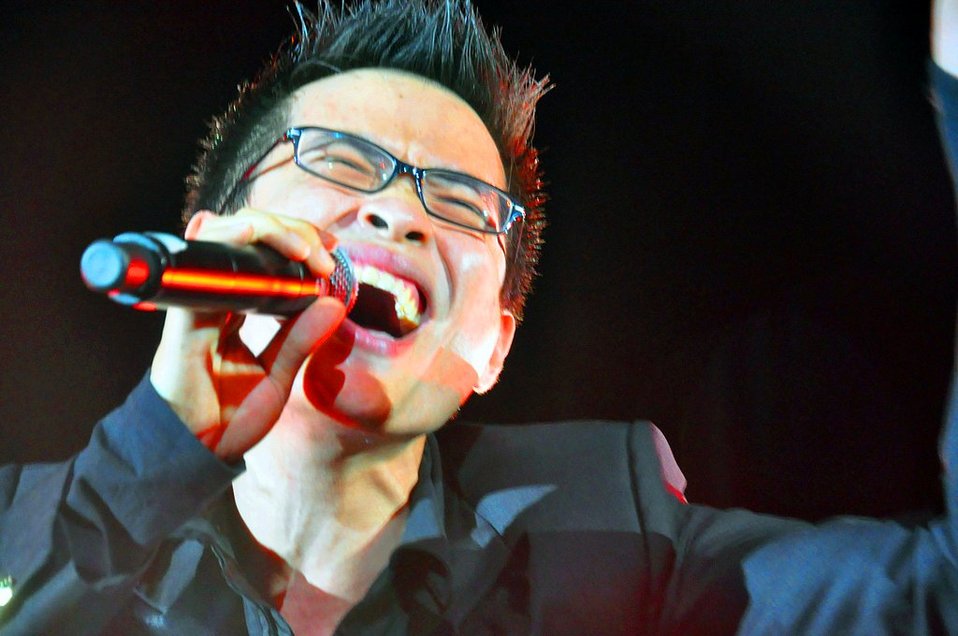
USAID, MTV EXIT concert series in Vietnam, 2010.

Vietnamese singer Ha Anh Tuan performs as part of the USAID, MTV Exit tour against human trafficking and exploitation.